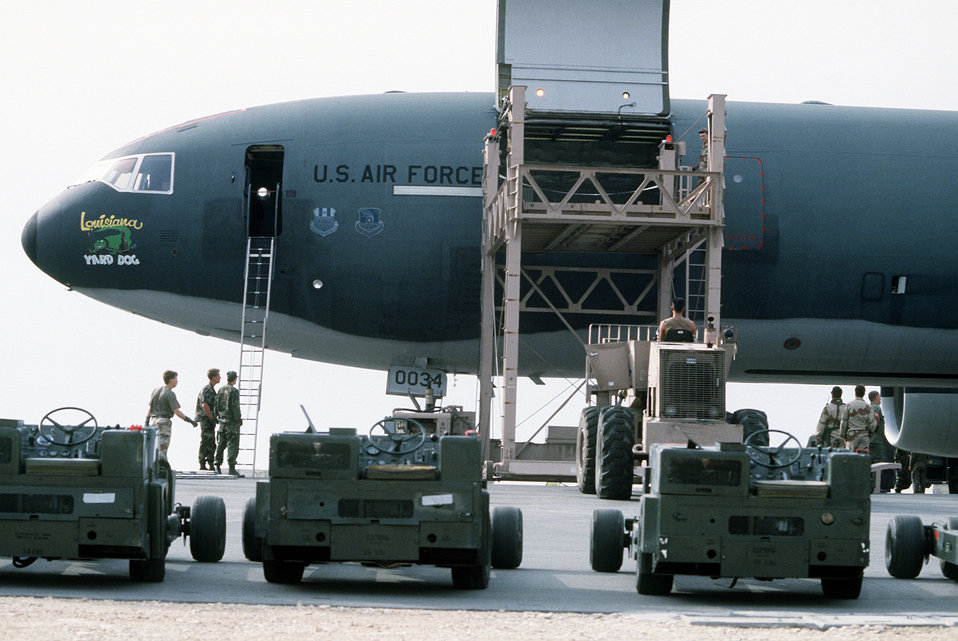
Bomb lifts are loaded aboard a KC-10A

1990's -- Bomb lifts are loaded aboard a KC-10A Extender aircraft for redeployment to the United States in the aftermath of Operation Desert Storm.